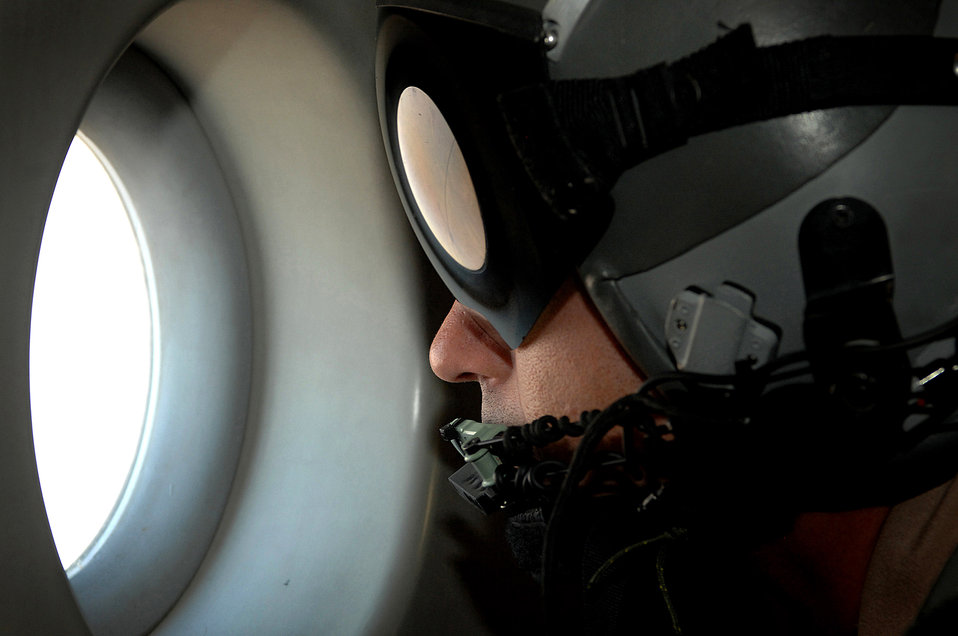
Exercise Bright Star 2007

Tech. Sgt. Dave Kimberly prepares to drop paratroopers from a C-17 Globemaster III aircraft into Cairo, Egypt, Nov. 7 as part of Exercise Bright Star 2007. Bright Star is a joint/combined command post and tactical field exercise designed to improve readiness and interoperability between U.S., Egyptian and other coalition forces. Sergeant Kimberly is a 14th Airlift Squadron loadmaster. The C-17s are from Charleston Air Force Base, S.C.